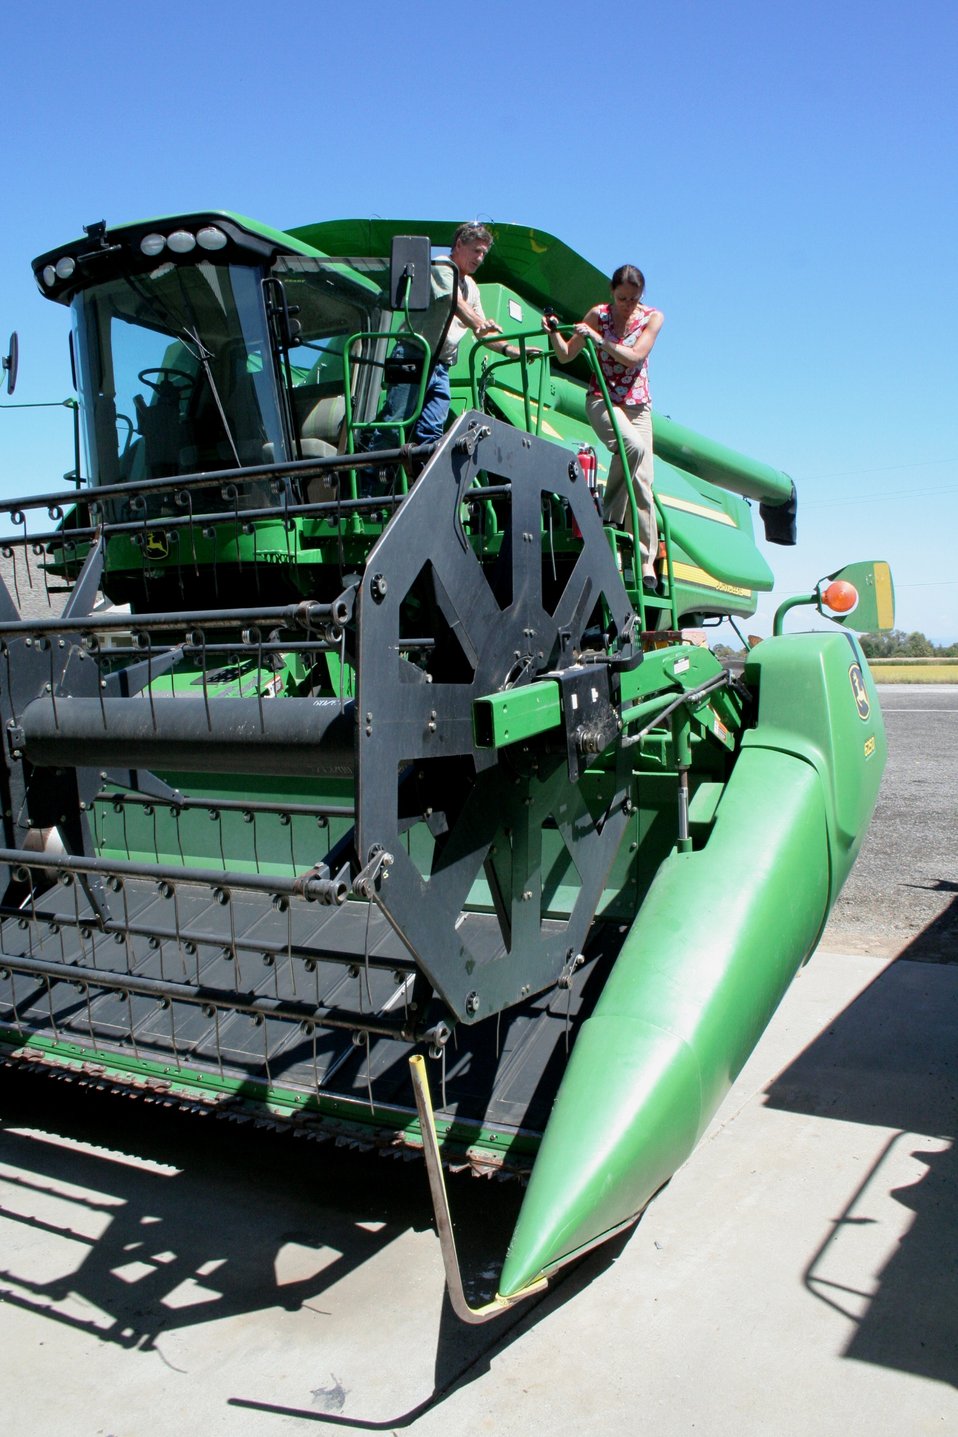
FDA's Rice Tour: Looking for Insights on Arsenic (0848)

FDA Commissioner Margaret A. Hamburg and colleagues visited research facilities and rice farms in California on Sept. 4-5, 2013 in an effort to gain a greater understanding of the presence of arsenic in rice. At the Lyle Job farm in Richvale, Calif., Job and Hamburg climb down from a rice harvester. For more information, read the FDA Voice blog:

• On Farms and in Labs, FDA and Partners Are Working to Get Answers on Arsenic in Rice